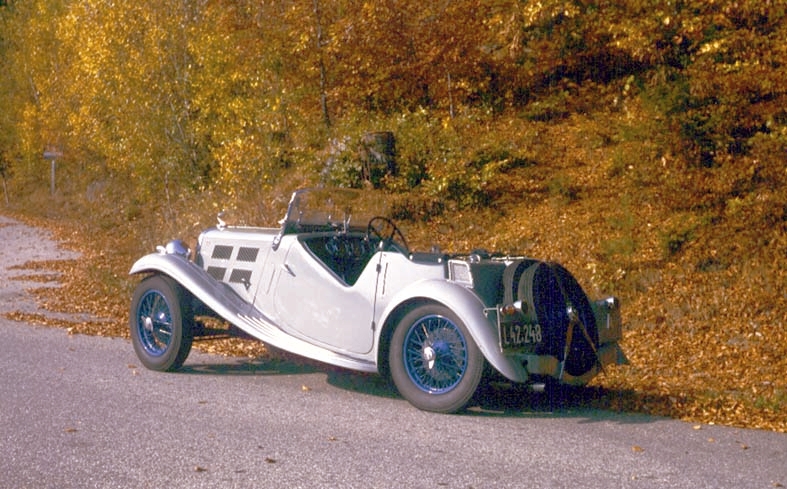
Deutsch: Sportzweisitzer Triumph Southern Cross